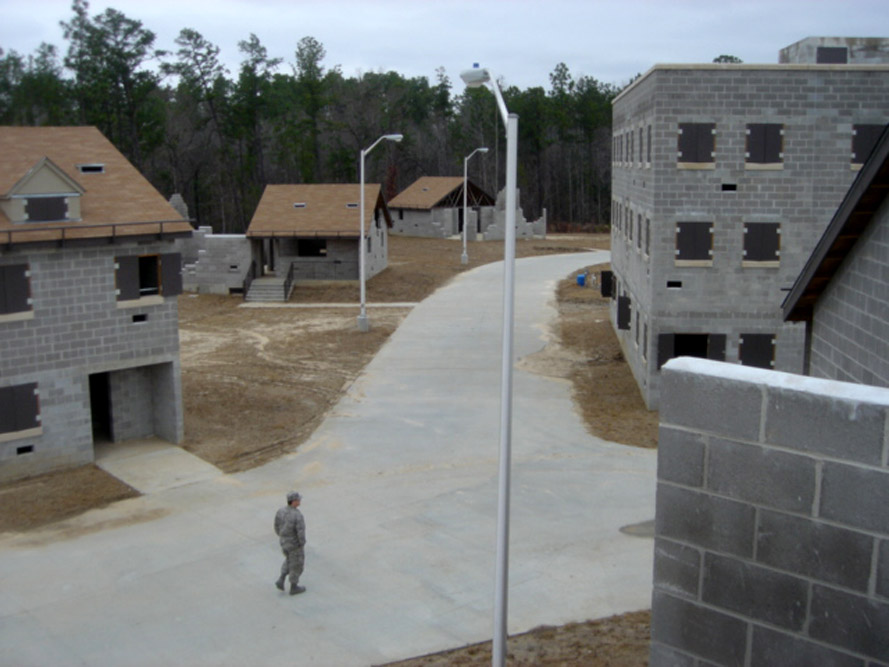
Officials move ROTC field training to Maxwell

Air Force ROTC cadets will participate in six days of expeditionary training at this simulated city at the Joint Force Training Center in Hattiesburg, Miss. The training is part of a new curriculum for Air Force ROTC cadets as all field training moves to Maxwell Air Force Base, Ala.